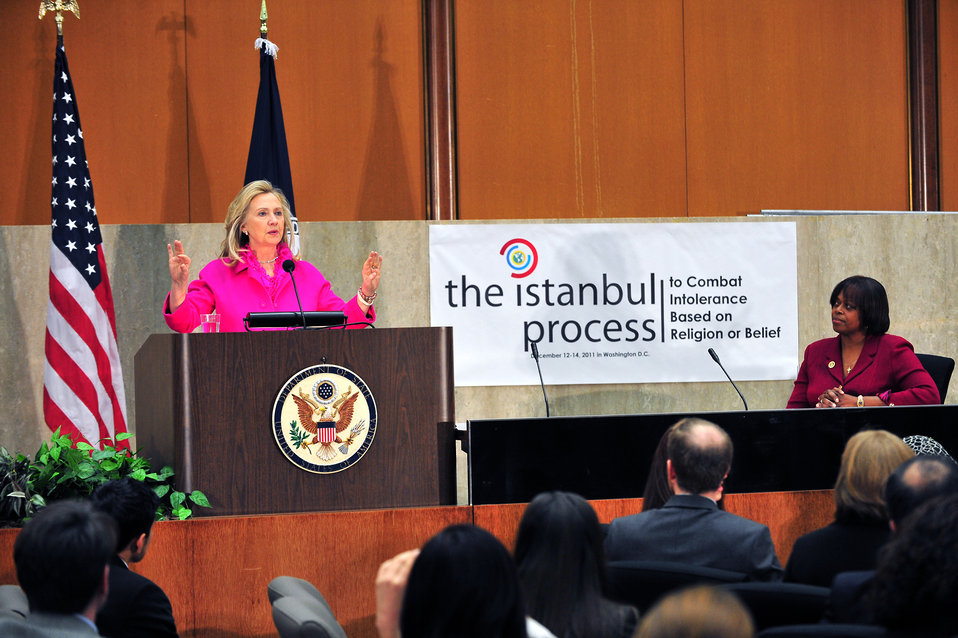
Secretary Clinton Address Istanbul Process for Combating Intolerance and Discrimination Based on Religion or Belief

U.S. Secretary of State Hillary Rodham Clinton addresses the Istanbul Process for Combating Intolerance and Discrimination Based on Religion or Belief, at the U.S. Department of State in Washington, D.C., on December 14, 2011.